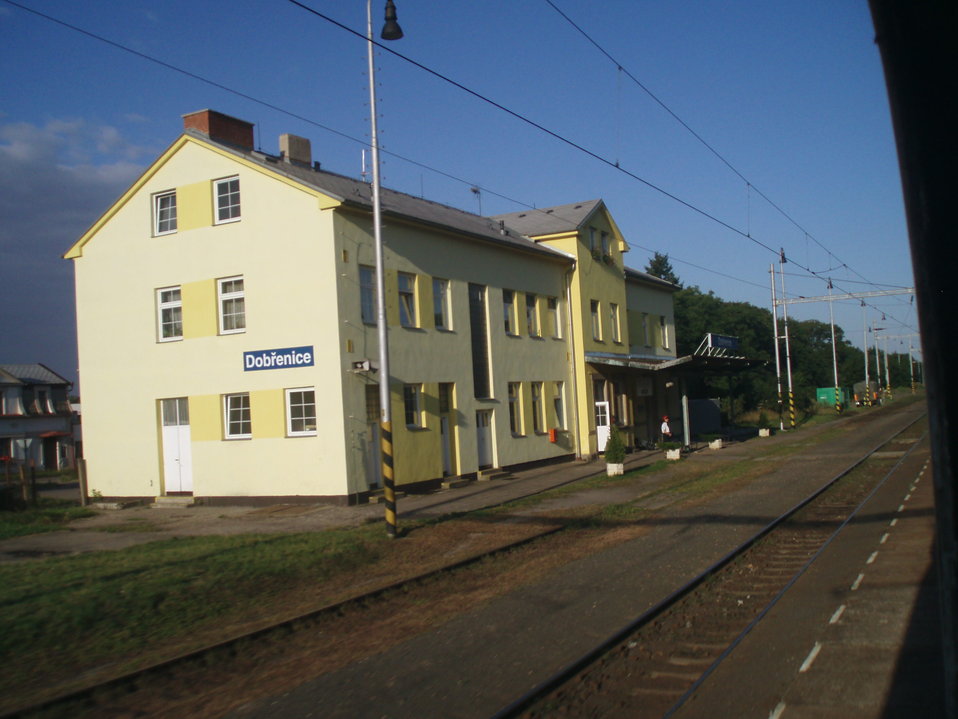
Čeština: Nádraží v Dobřenicích. Railway station in Dobřenice.